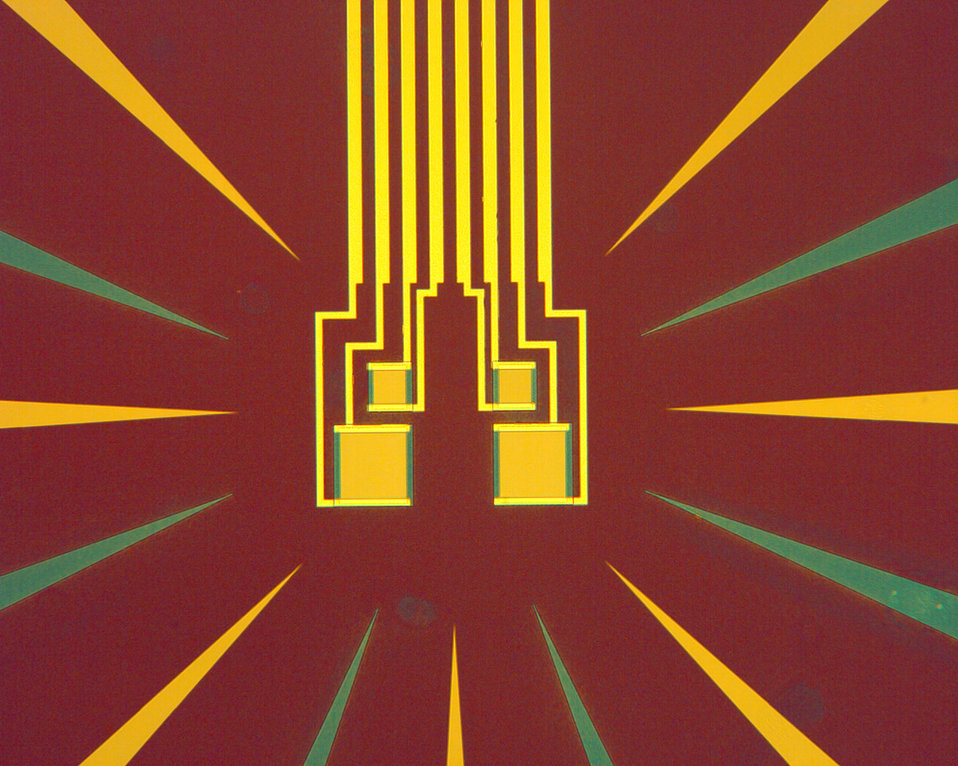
Single Photon Detectors

The four yellow squares in the center of this micrograph are NIST single photon detectors. The top two detectors are 25 by 25 micrometers. The bottom two detectors are 50 by 50 micrometers. The detectors operate with a record 88 percent efficiency (as of June 2005).